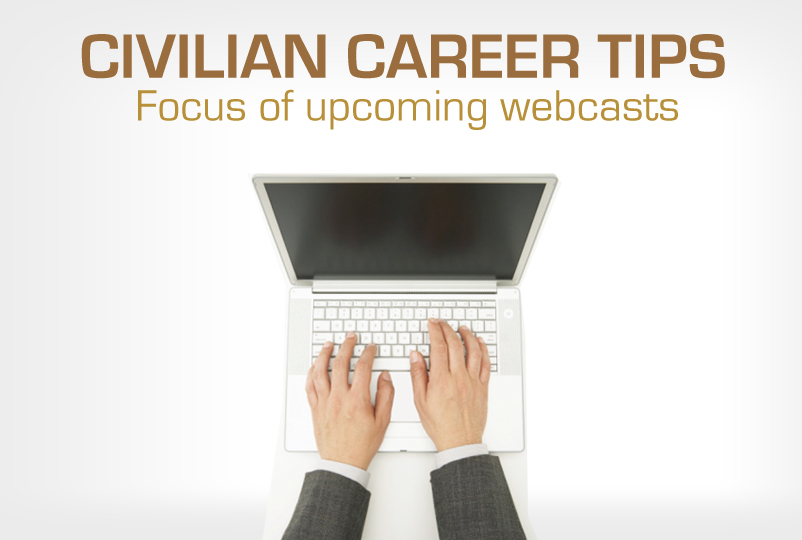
Civilian Career Tips